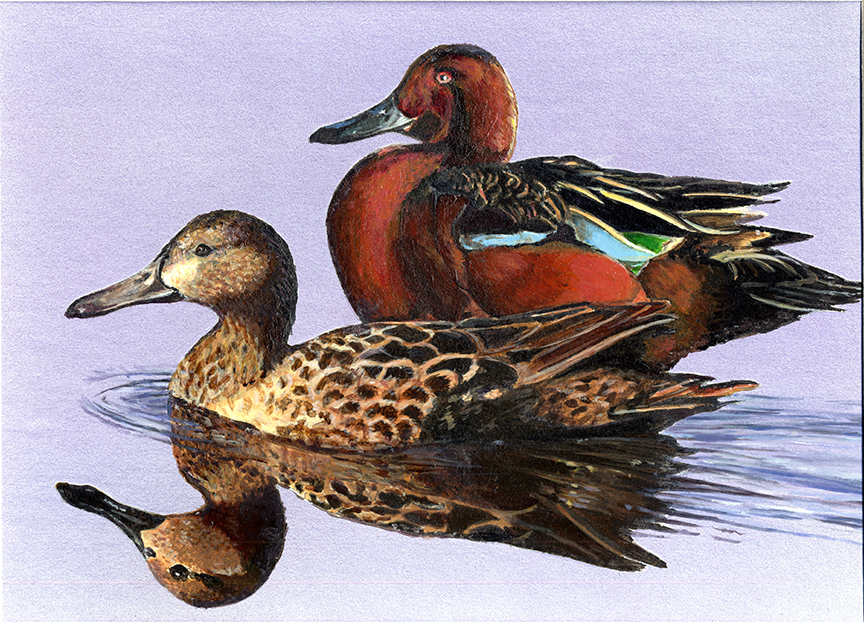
JRDuck2013PA

2013 Junior Duck Stamp Best of Show-Pennsylvania